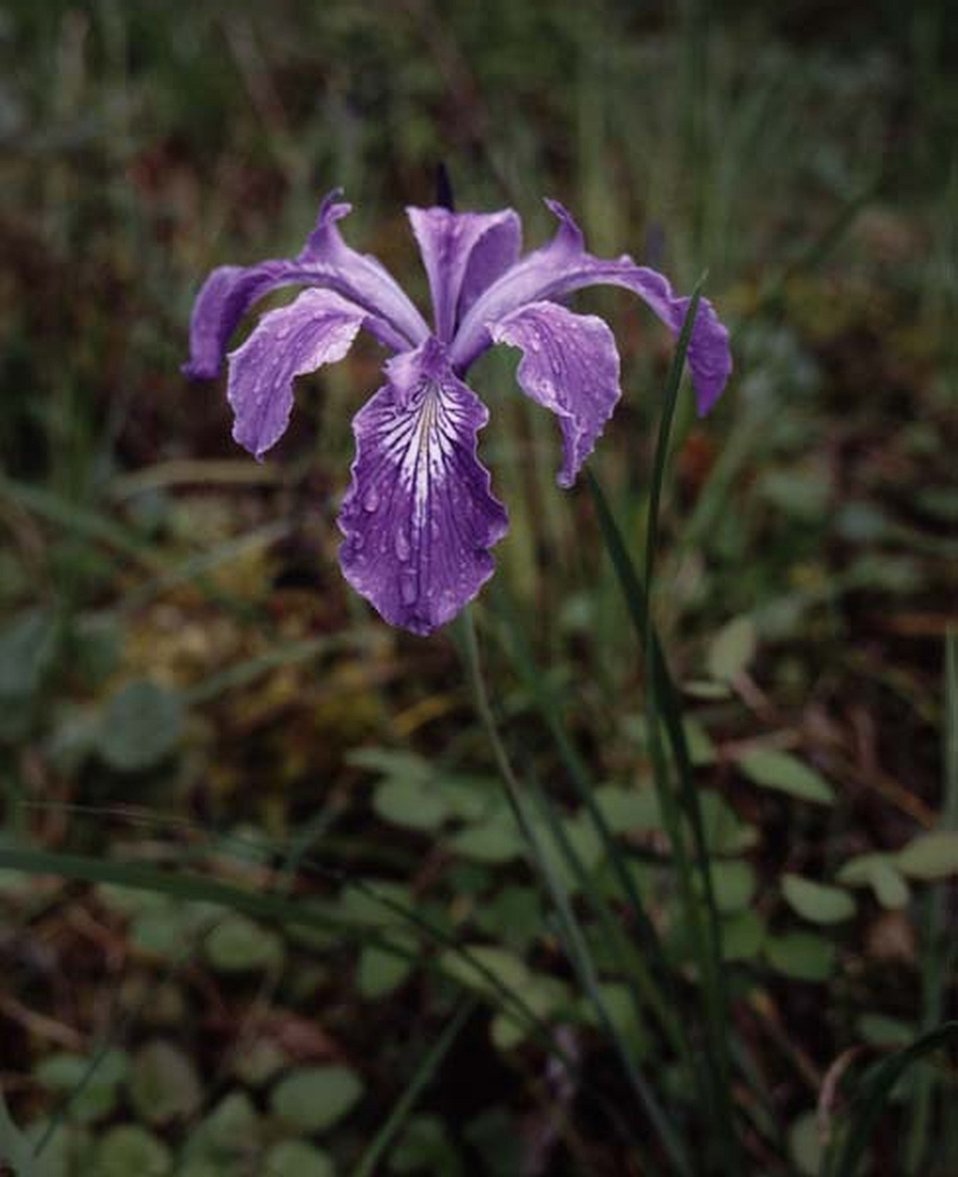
Closeup shot of Iris.